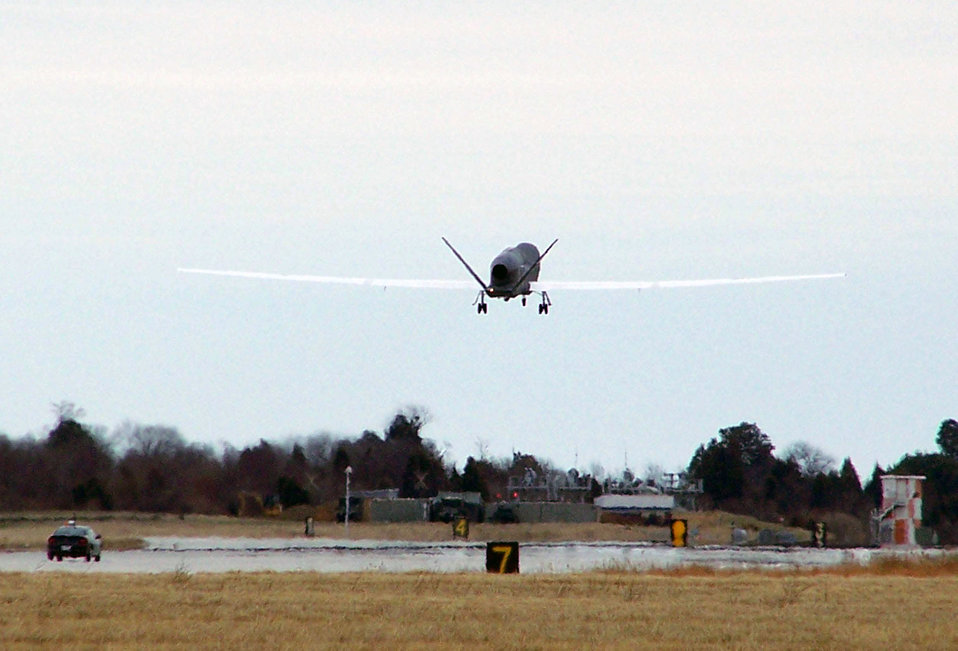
Navy Global Hawk arrives in Southwest Asia

The U.S. Navy's first operational Global Hawk unmanned aircraft takes off from Naval Air Station Patuxent River, Md., on its flight to an airbase in Southwest Asia. The Global Hawk is part of the new Broad Area Maritime Surveillance program.